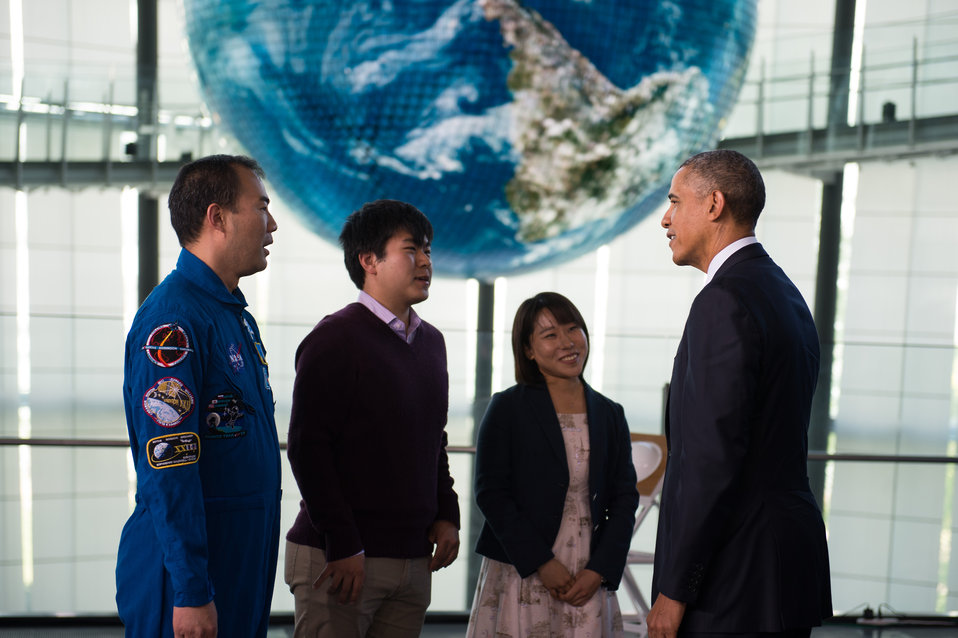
President Obama Talks to Japanese Astronaut and Students

U.S. President Barack Obama talks to Japanese astronaut Soichi Noguchi and students during his visit to the Miraikan (the National Museum of Emerging Science and Innovation) in Tokyo, Japan, on April 24, 2014.